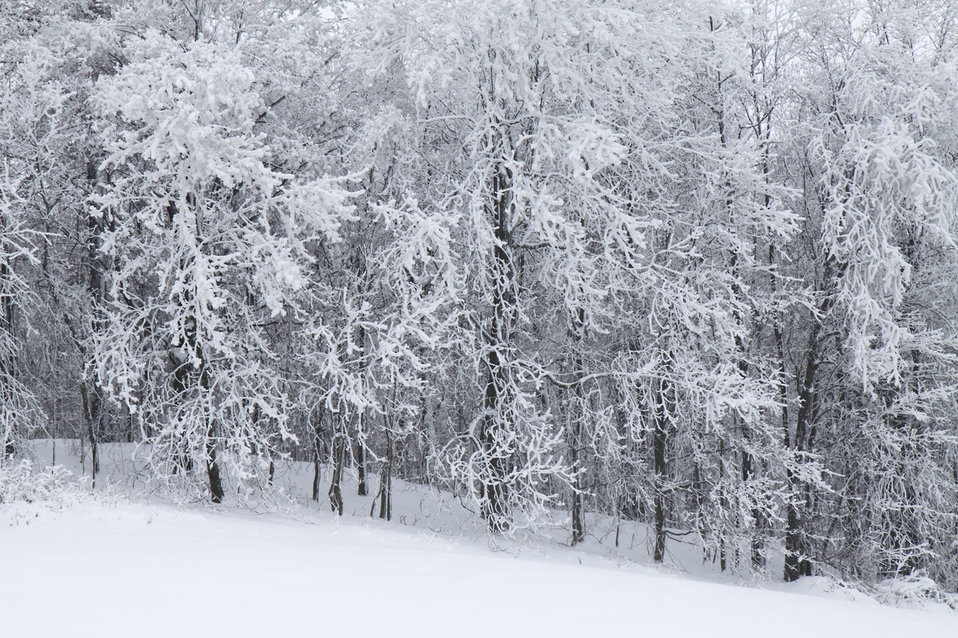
Snow covered trees

Snow covered forest.